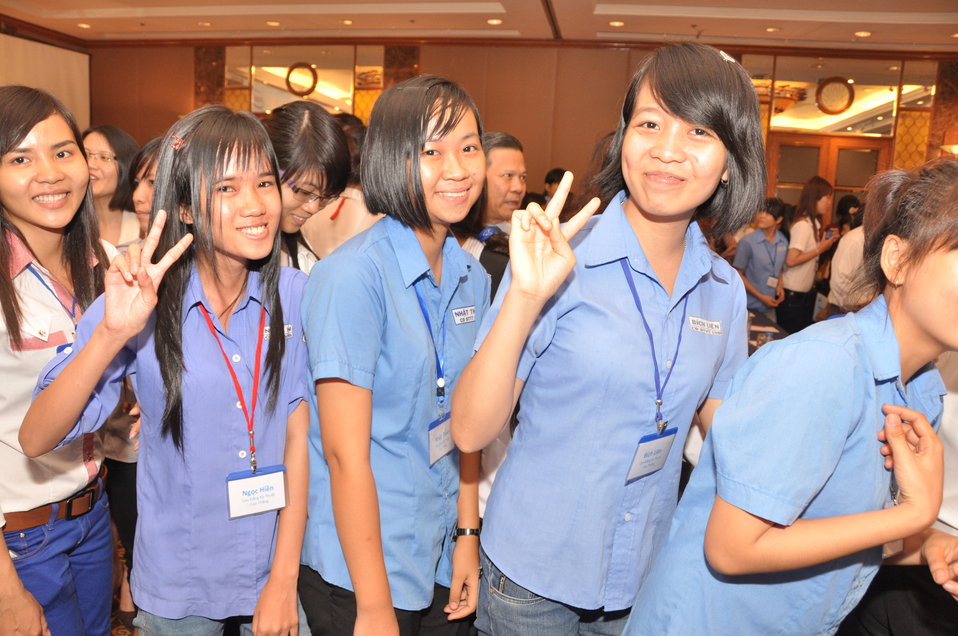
Female Vocational Student Scholarship Ceremony

January 11, 2013, Ho Chi Minh City